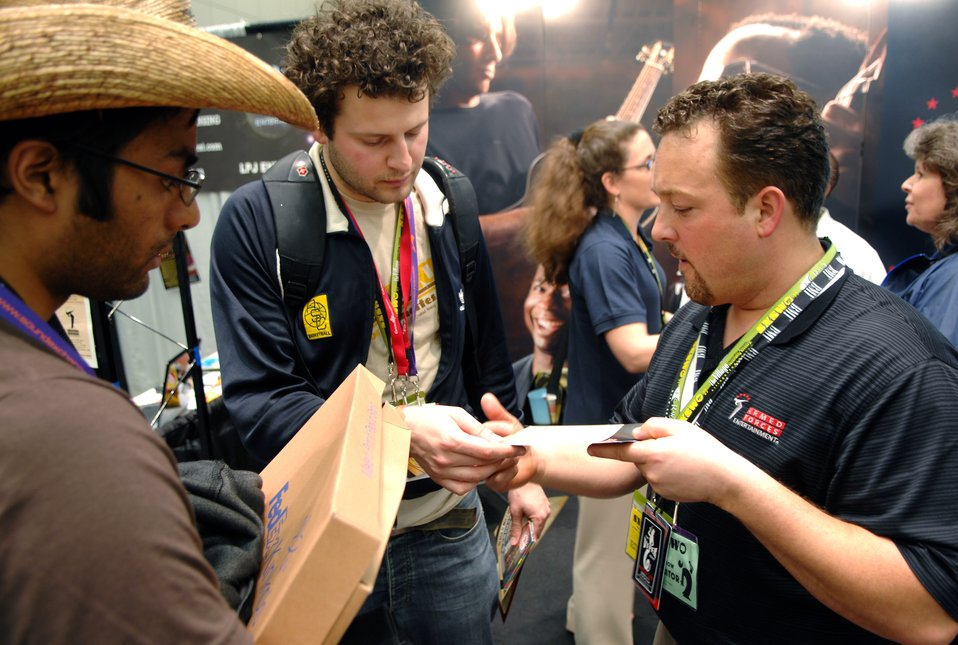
South by Southwest

(Left to right) Prashant Vallury and Artuhr Wnorowski of the band